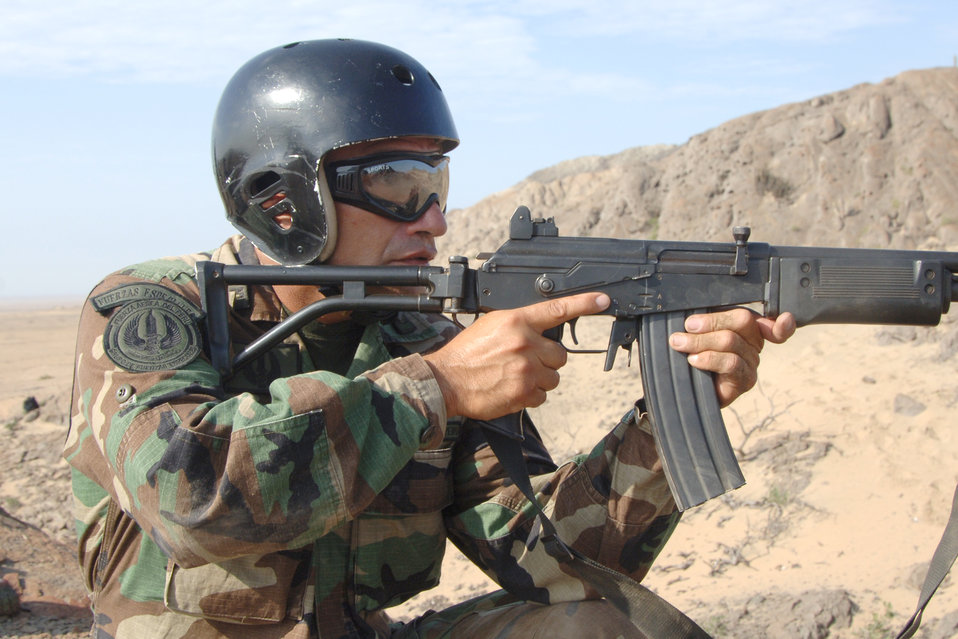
U.S., Peruvian Air Forces reach milestone

A member of the Peruvian special forces keeps an eye out during a joint combat search and rescue exercise Feb. 14 near Chiclayo, Peru. The exercise was part of Falcon and Condor 2007, a joint exercise between the U.S. and Peruvian Air Forces.